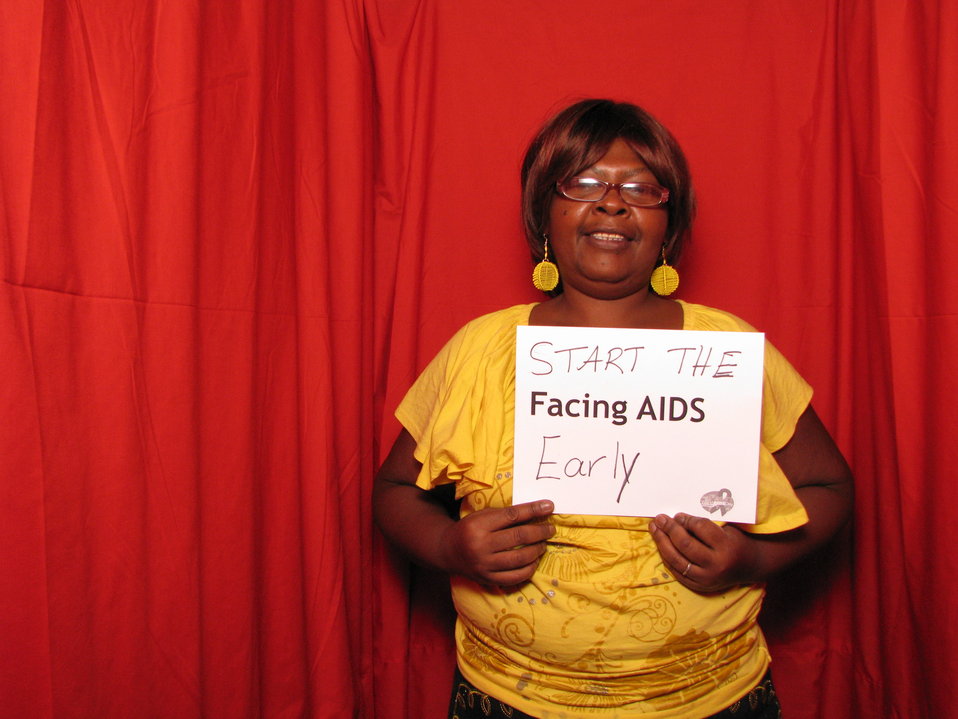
START THE FACING AIDS early.

From the AIDS.gov photo booth at the U.S. Conference on AIDS, September 2010 (Orlando, FL).